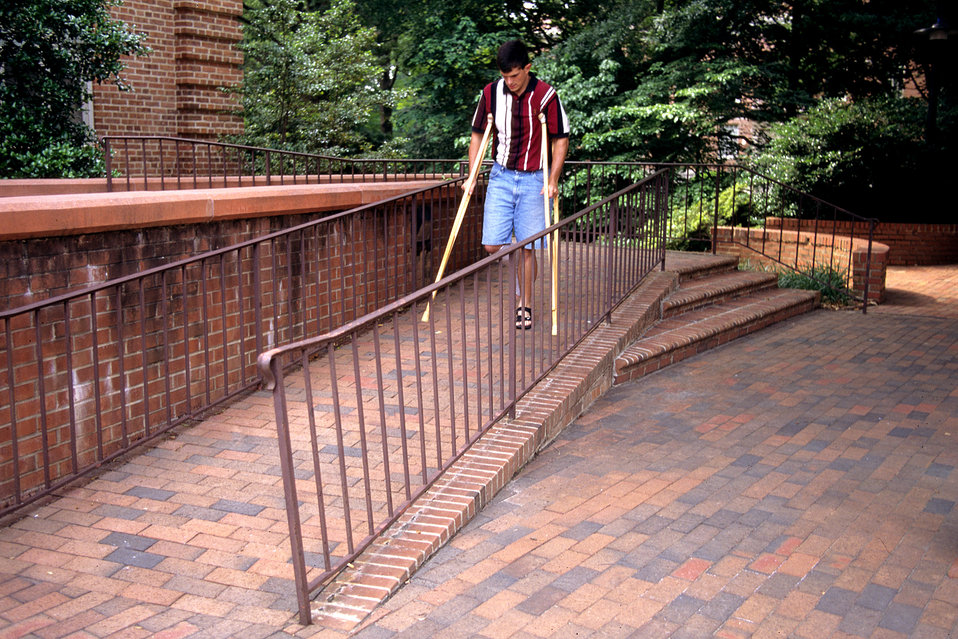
This image, as well as PHIL# 9014, and 9017, all depicted people with reduced states of mobility, who were accessing a walkway ramp while using either crutches, or a wheelchair. In this particular view, a brick switch-back ramp with its black metal railings, had been added to the entrance on an older, traditionally-designed fa�e, whereupon, the ramp began not far from where the stairs had been positioned, thereby, making the accessibility route short, and easy to find, which stands in stark contrast to PHIL# 9012. This made the choice in access route easier for visitors, demonstrating that some ramps, as well as other 'stepless'-entrance features, can benefit people who are ambulatory, as well as those who use wheelchairs.